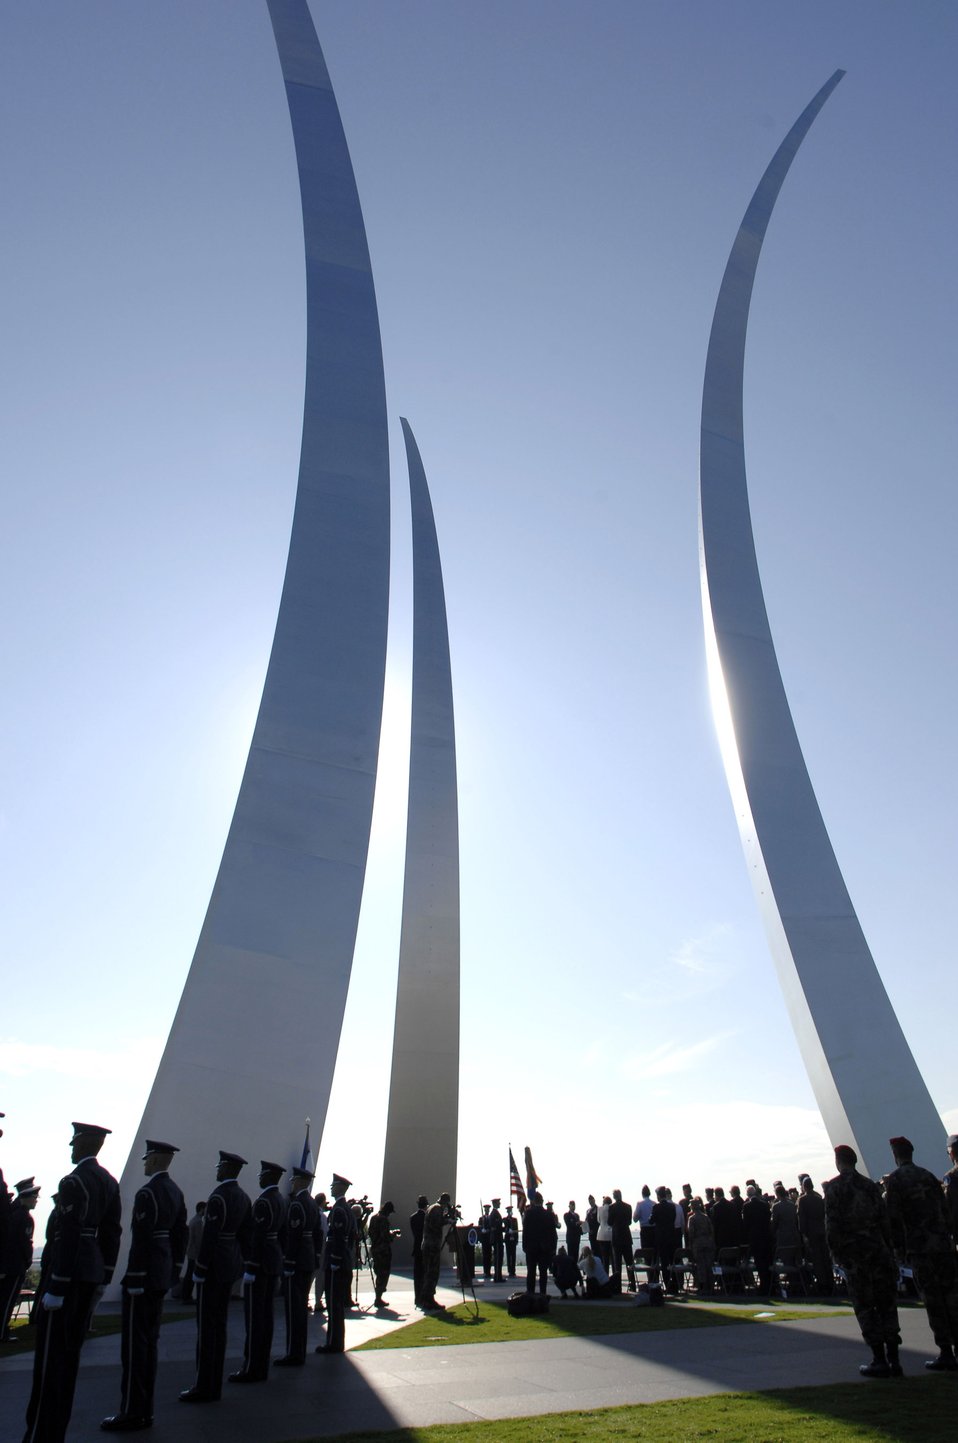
Air Force Combat Action Medal

Beneath the spires of the Air Force Memorial, in Arlington, Va., Air Force Chief of Staff T. Michael Moseley awarded six Airmen the new Air Force Combat Action Medal June 12. The decoration is the first of its kind for the Air Force. The medal was designed for Airmen who have been directly in harm's way, engaging enemy forces.